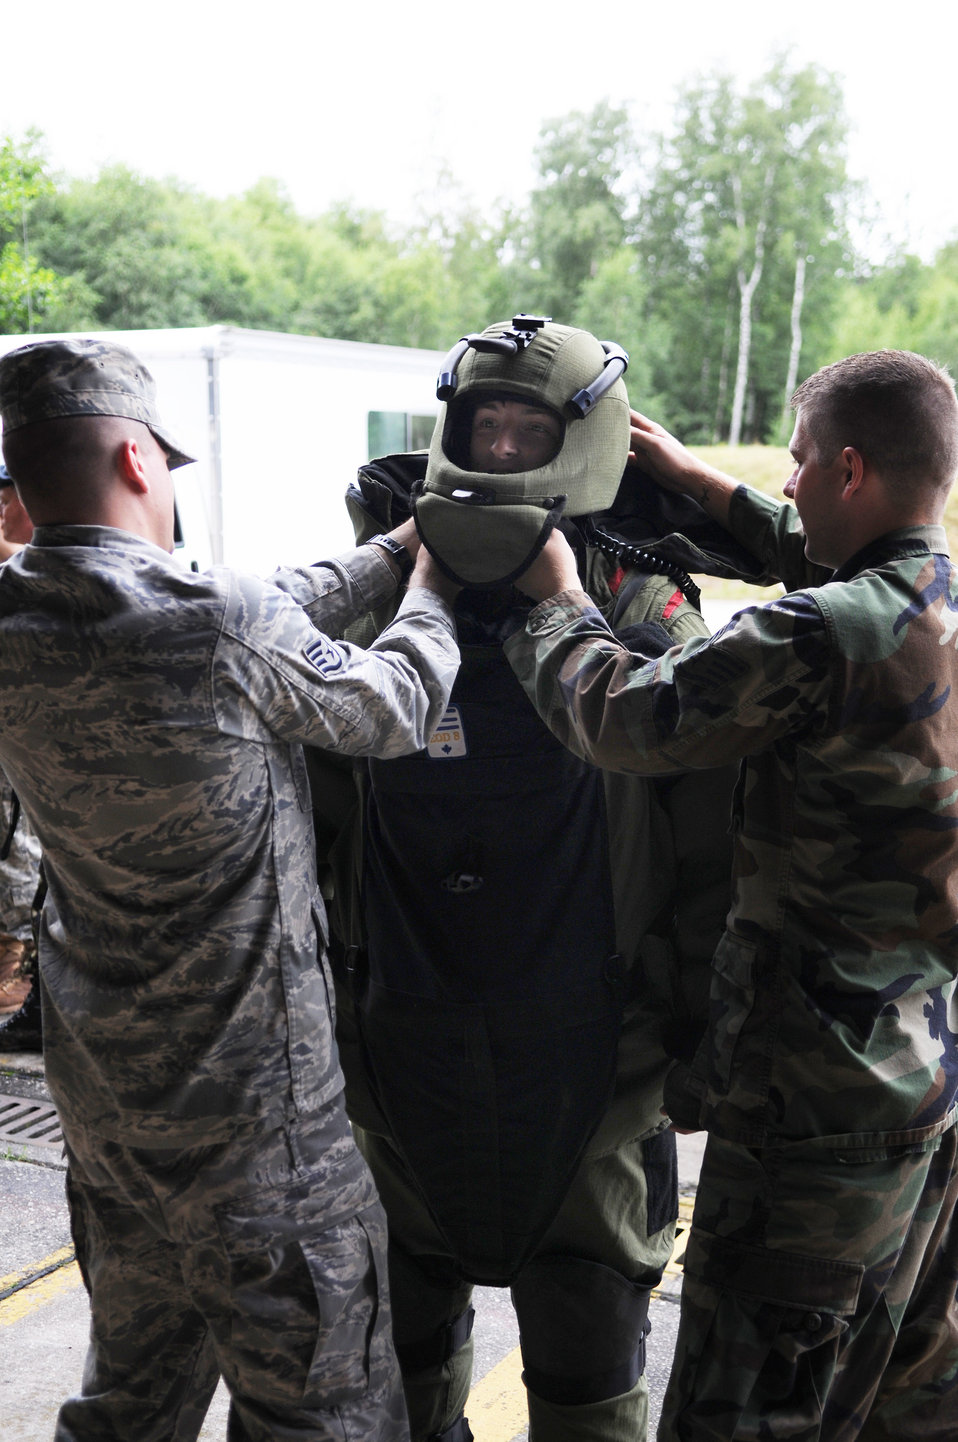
British cadets nurture 'spirit of adventure' at Ramstein

Staff Sgts. James Hodges and Dustin Jolman help British Air Cadet Sgt. Andy Magee put on an explosive ordnance disposal bomb suit during the cadet's July 14 visit to Ramstein Air Base, Germany. Cadets visited Ramstein AB for a week of leadership development and contingency skills training. Sergeants Hodges and Jolman are 86th Construction and Training Squadron instructors.